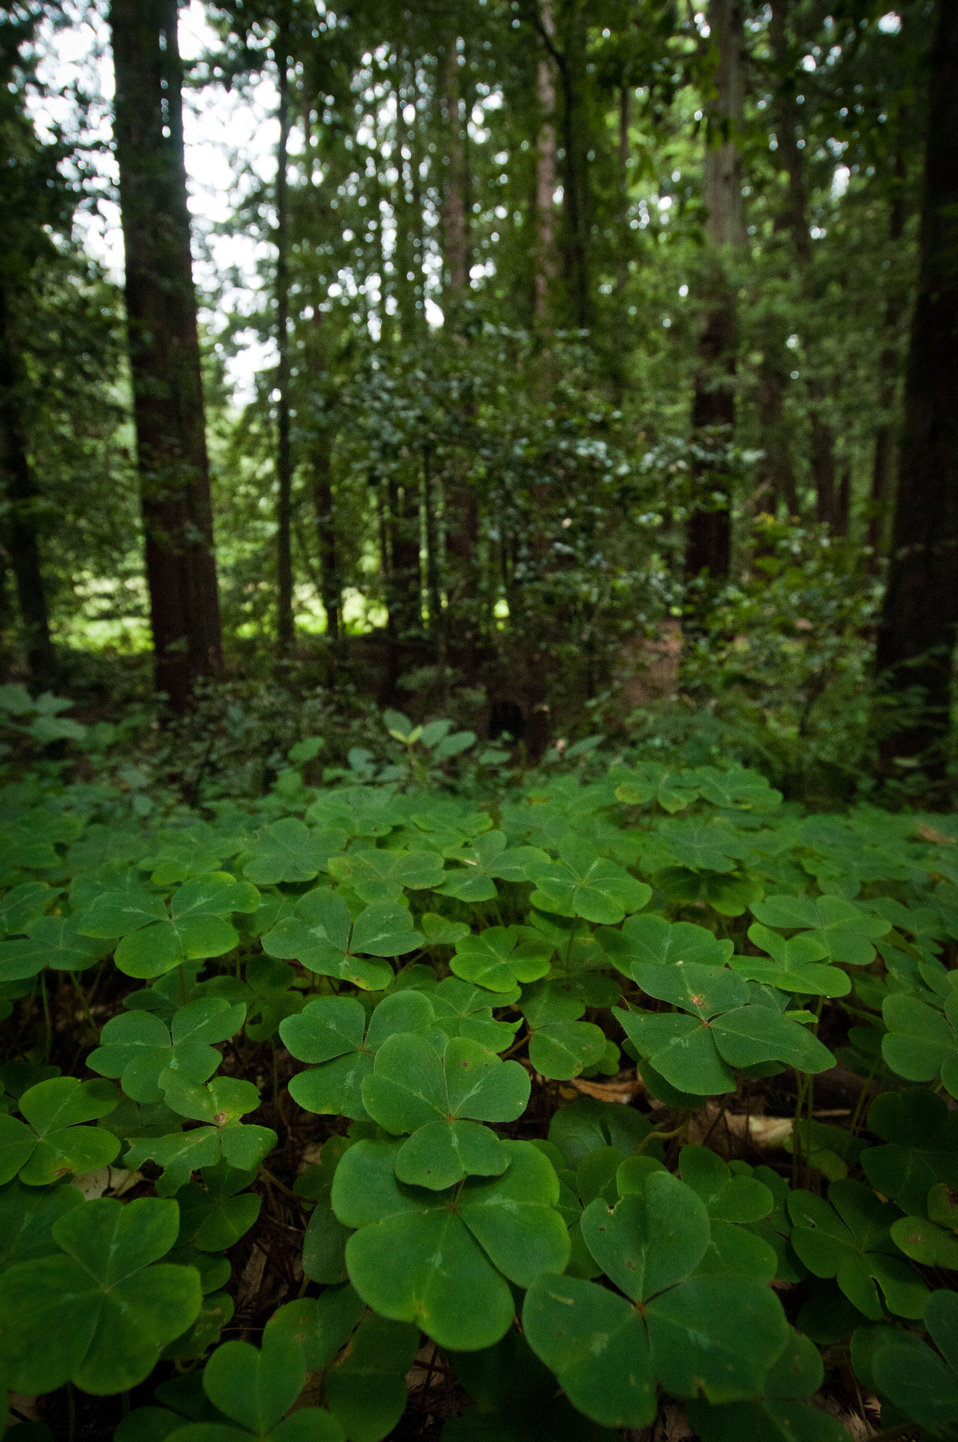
A private forest in Santa Cruz County, CA, on Friday, June 17, 2011. Watersheds such as this were factors in the America’s Great Outdoors Initiative (AGO) Monterey Bay Pilot Area Focus Session in the City of Watsonville’s Civic Plaza in California. It was a gathering of representatives from Federal resource management agencies to begin to identify partnership opportunities. The process was to help determine actions for achievable natural resource protection and enhancement that protect water quality and publicize voluntary stewardship of the watersheds such as this area that drains into the Monterey Bay National Marine Sanctuary. This area includes the counties of San Mateo, Santa Cruz, Santa Clara, San Benito, Monterey, and San Luis Obispo.